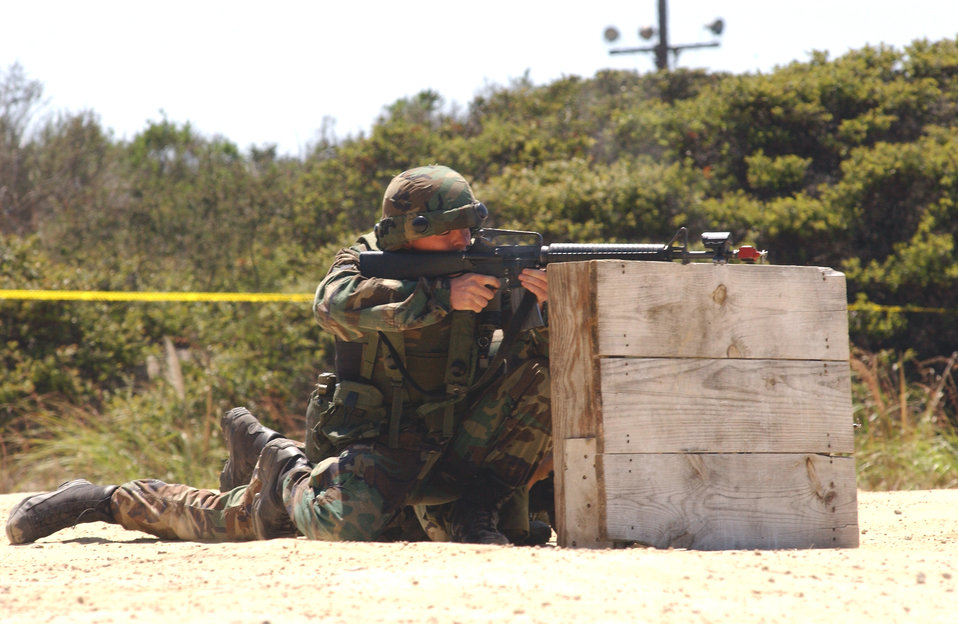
Gotcha

VANDENBERG AIR FORCE BASE, Calif. -- Airman 1st Class Christopher Dickerson fires rounds at aggressors during the security forces tactics competition for Guardian Challenge here May 4. Guardian Challenge, the world's premier space and missile competition, is a four-day event held annually. It tests the wartime readiness of Air Force Space Command's Airmen in spacelift, ICBM operations, communications, maintenance, helicopter operations, security forces and chef food preparation. Airman Dickerson is assigned to the 460th Air Base Wing, Buckley Air Force Base, Colo.